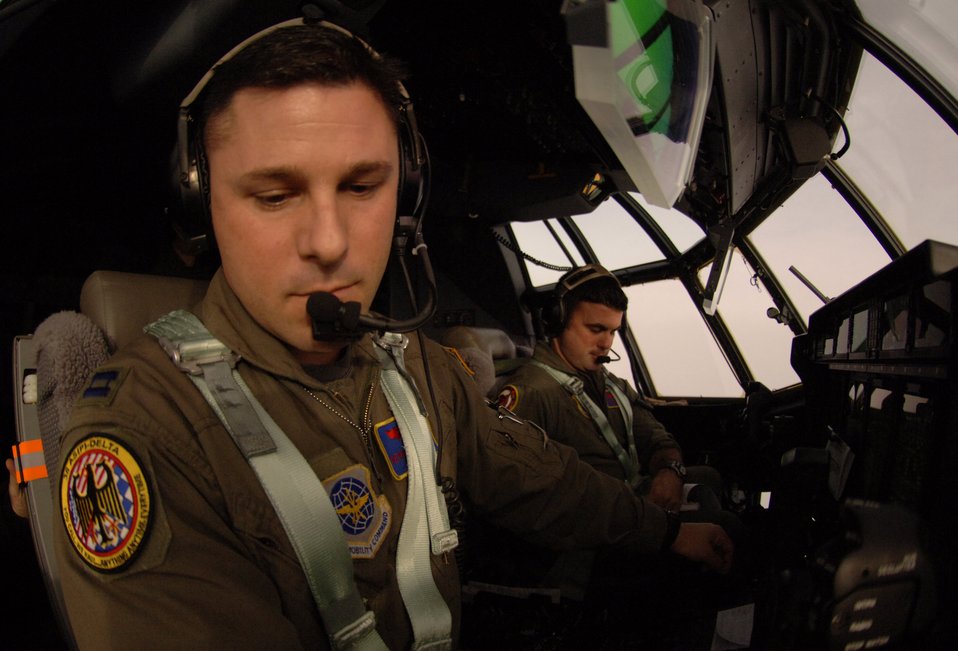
Total force provides seamless airlift support

Capt. Kevin McDonnell reads a map while on board a C-130 Hercules Jan. 9 while enroute to Aviano Air Base, Italy. He is a Rhode Island Air National Guard C-130 co-pilot on temporary duty to the 38th Airlift Squadron at Ramstein Air Base, Germany.